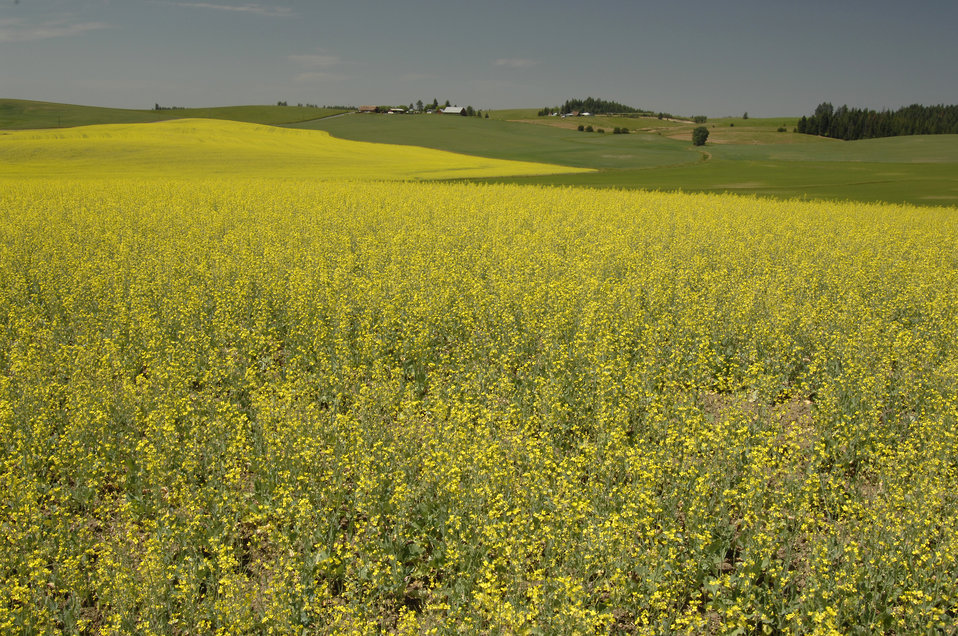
A farm located near Moscow, Idaho on July 8, 2008.